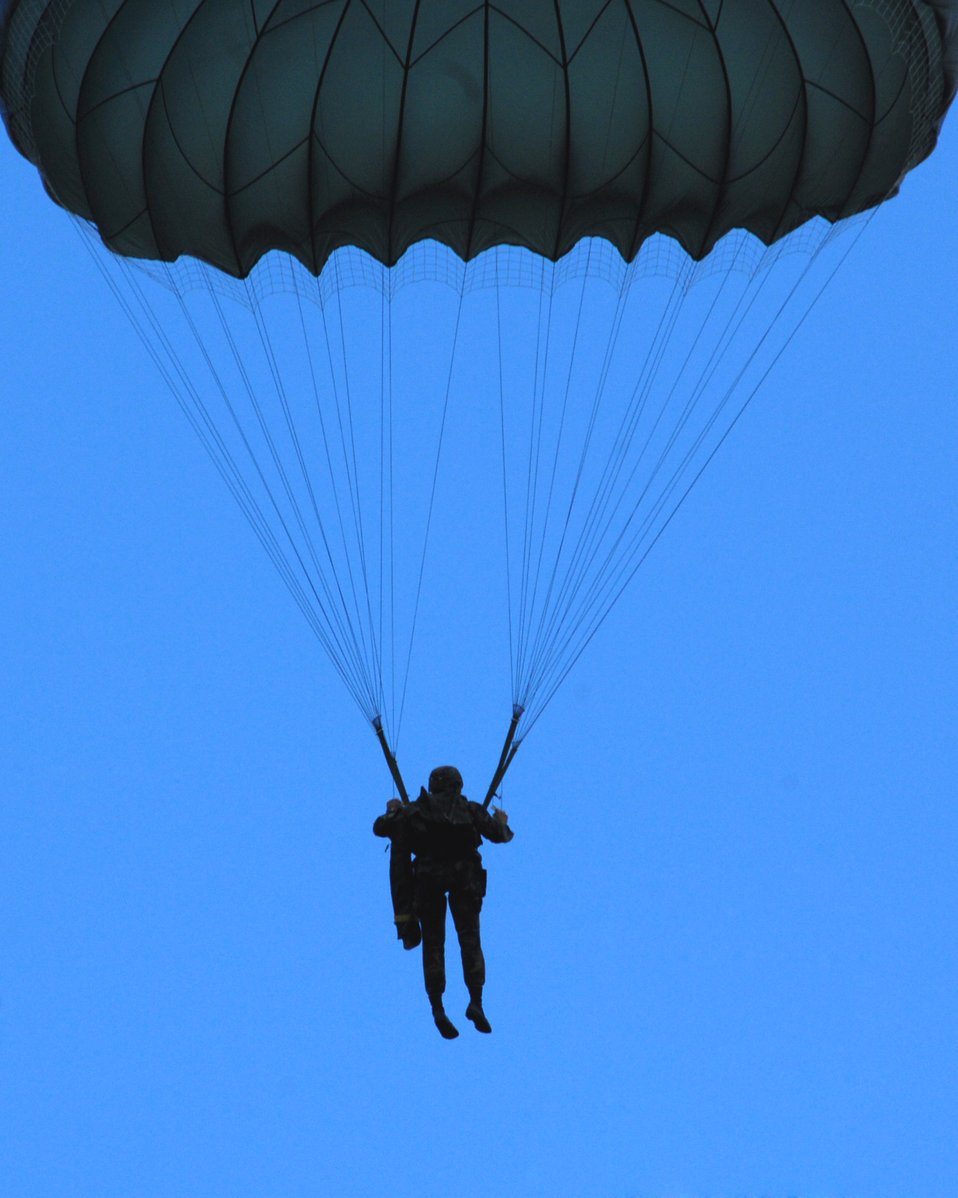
Airborne over Deutschland

An Airman of the 786th Security Forces from Sembach Annex, Germany parachutes down March 8 during a tactical training exercise over southwestern Germany.